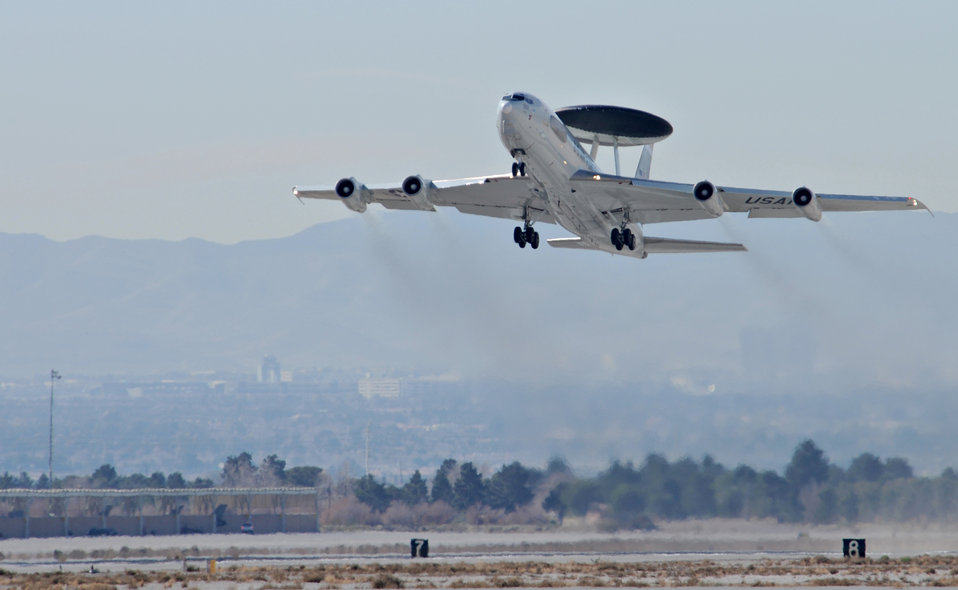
Red Flag 11-2 provides combat experience

An E-3 Sentry deployed from 552nd Air Control Wing, Tinker Air Force Base, Okla., takes off from the flightline during the first day of Red Flag 11-2 Jan. 24, 2011, at Nellis Air Force Base, Nev. Red Flag is a combined exercise that provides a realistic, combat-training environment to the U.S. and its allies.